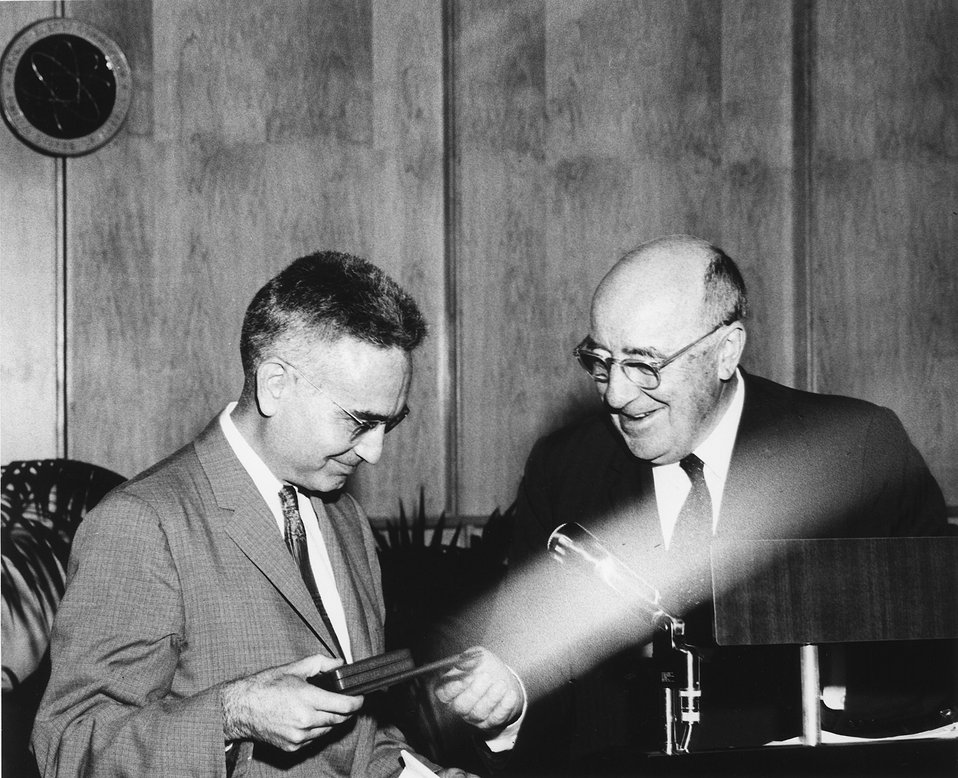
First Lawrence Award Ceremony, in Washington, on June 27, 1960.